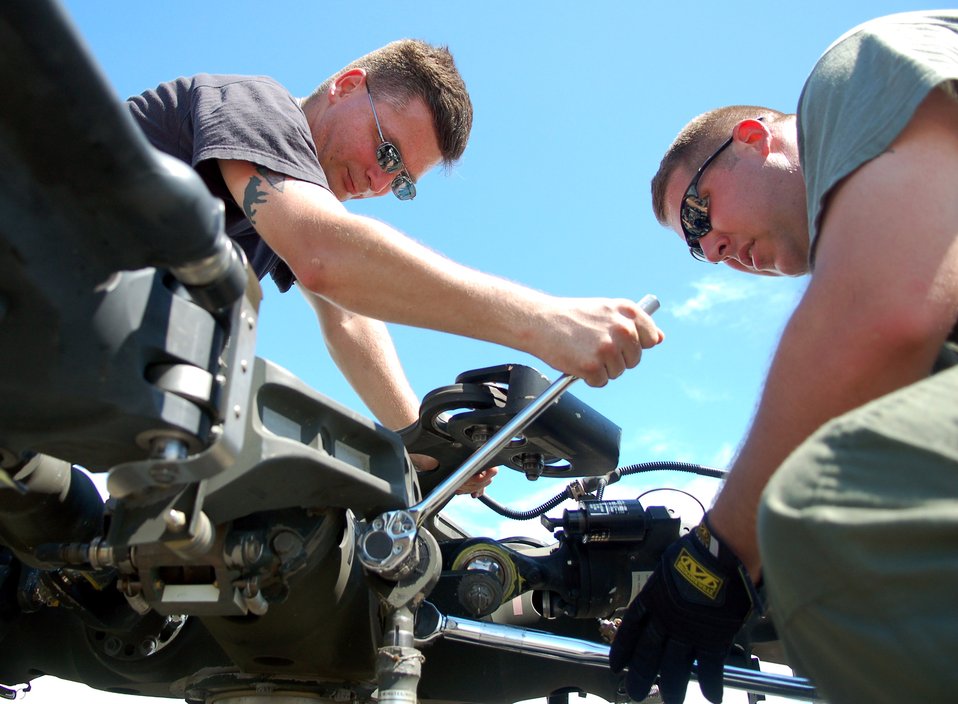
Air Force medics augment deployed Army aviation team

Staff Sgt. Robert Daly (left) lends a hand to Army Sgt. 1st Class Jason Rittichier while he secures the main rotor blades on a UH-60 Black Hawk that has just been unloaded Nov. 8 from an C-5 Galaxy in the Dominican Republic. Joint Task Force-Bravo at Soto Cano Air Base, Honduras, deployed a team of 21 servicemembers to assist in relief efforts after Tropical Storm Noel pounded the small island nation. Sergeant Daly is with the JTF-Bravo Medical Element and Sergeant Rittichier is a UH-60 crew chief with the 1st Battalion-228th Aviation Regiment.